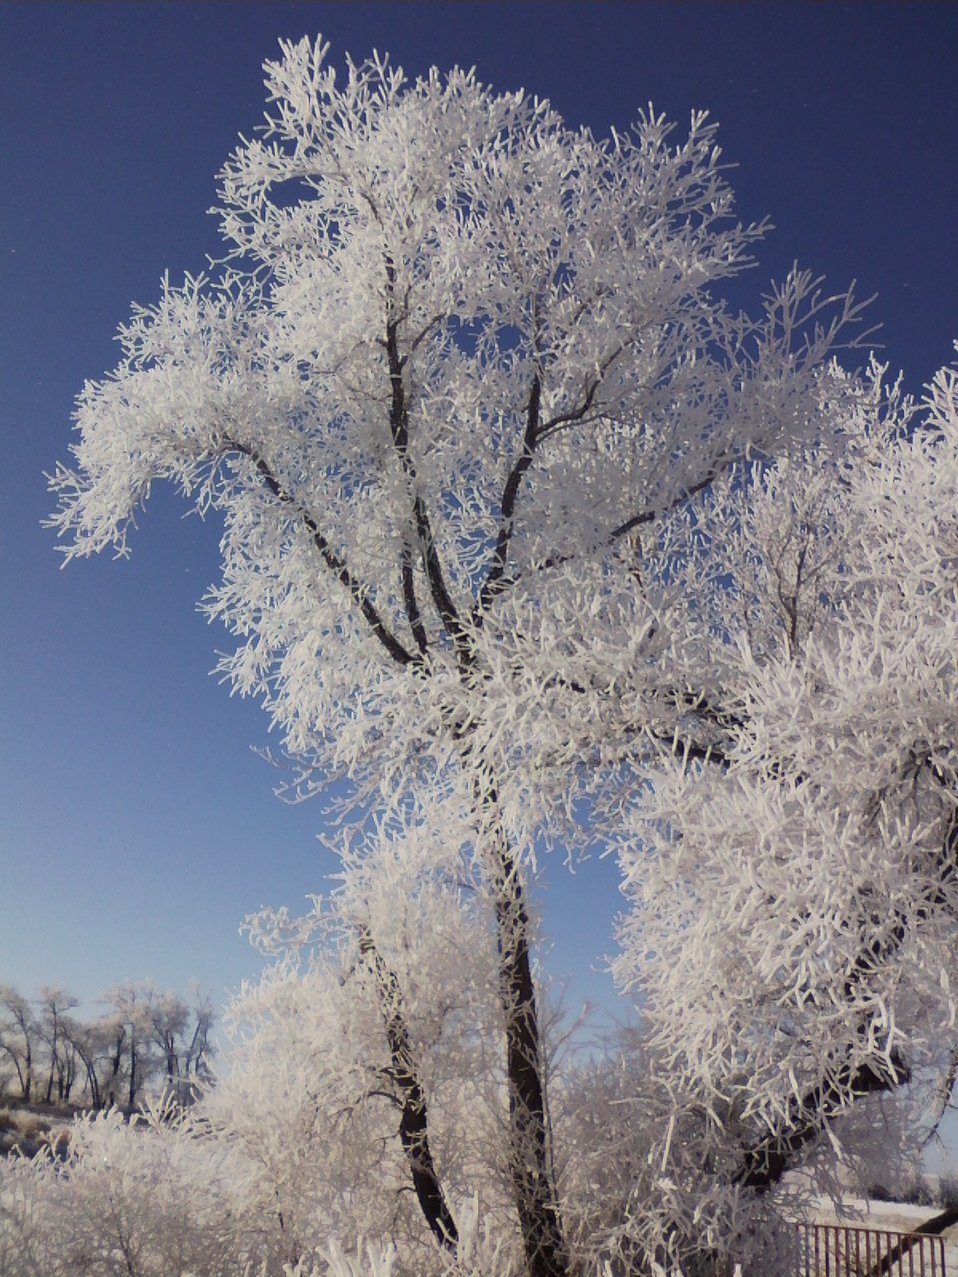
Winter on Bowdoin NWR

Winter on the Bowdoin National Wildlife Refuge Credit: Todd Boonstra / USFWS